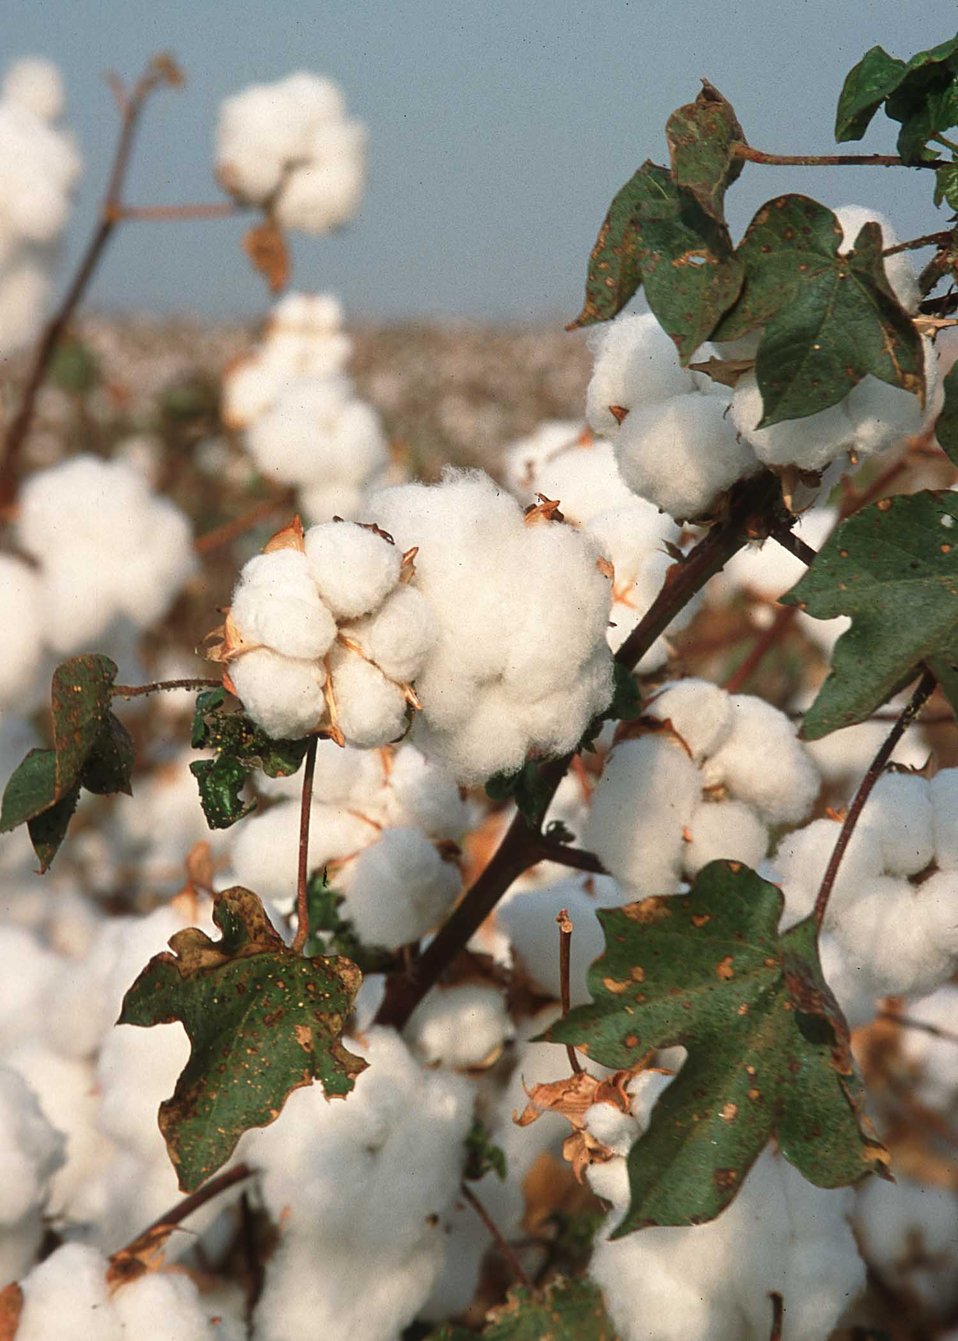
Cotton grown in Northern California.